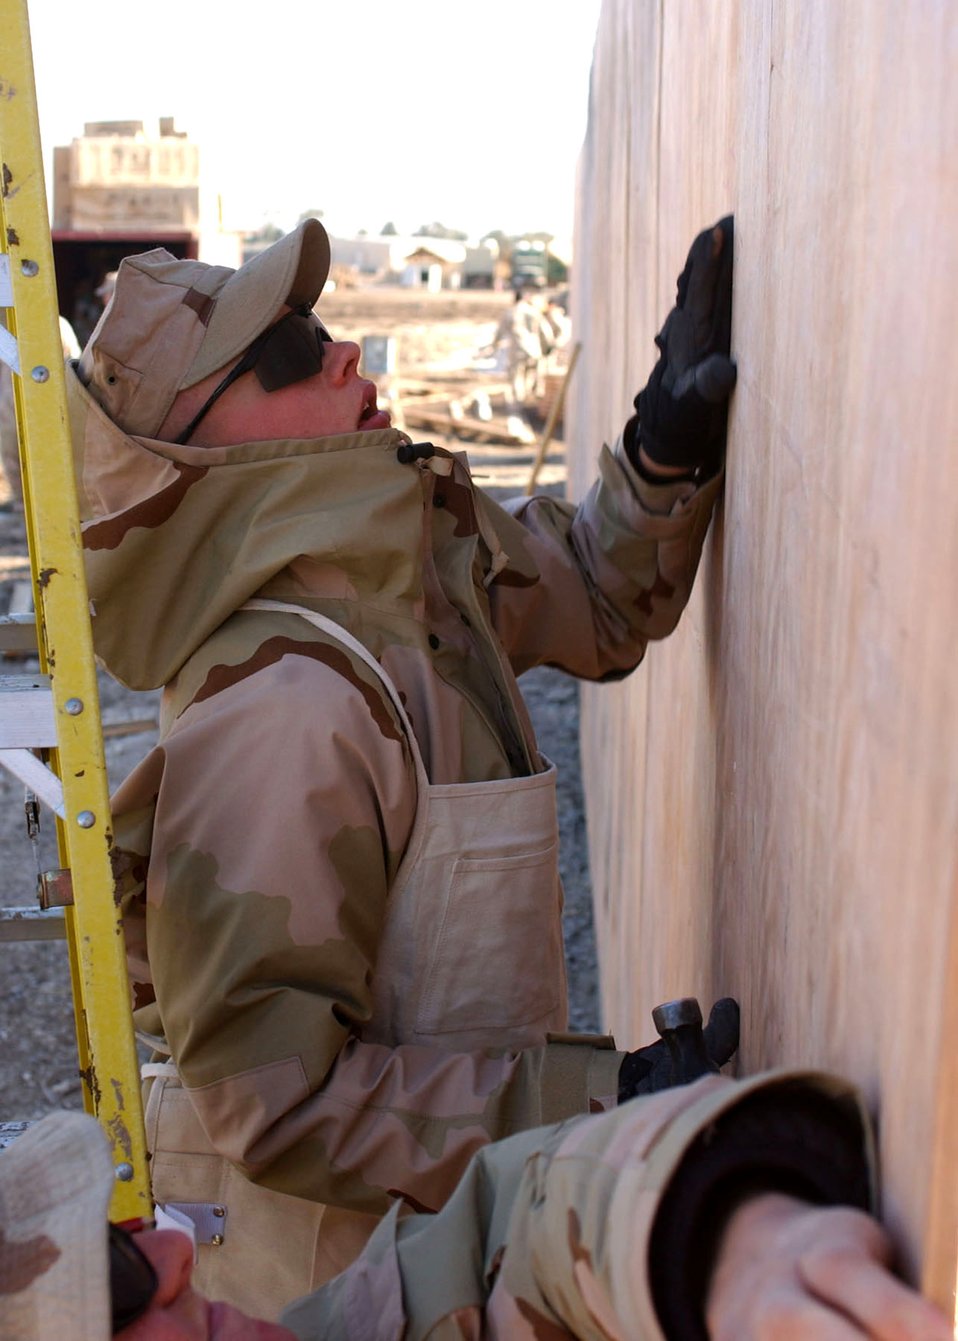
Airmen build future with present mission

Airman Nick Soracco lifts a panel of wood for the exterior wall of an office building being constructed at Camp Liberty in Iraq Dec. 28. Airman Soracco is a civil engineer with the 1st Special Operations Civil Engineer Squadron at Hurlburt Field, Fla.